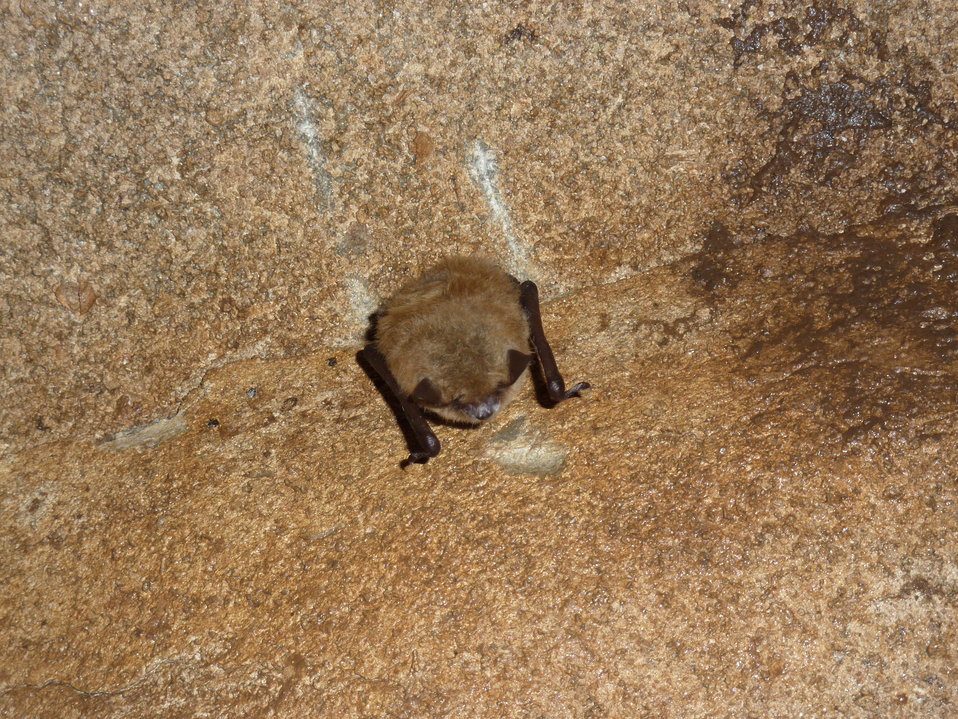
Little brown bat with WNS, Trigg Co., KY

Single little brown bat with WNS